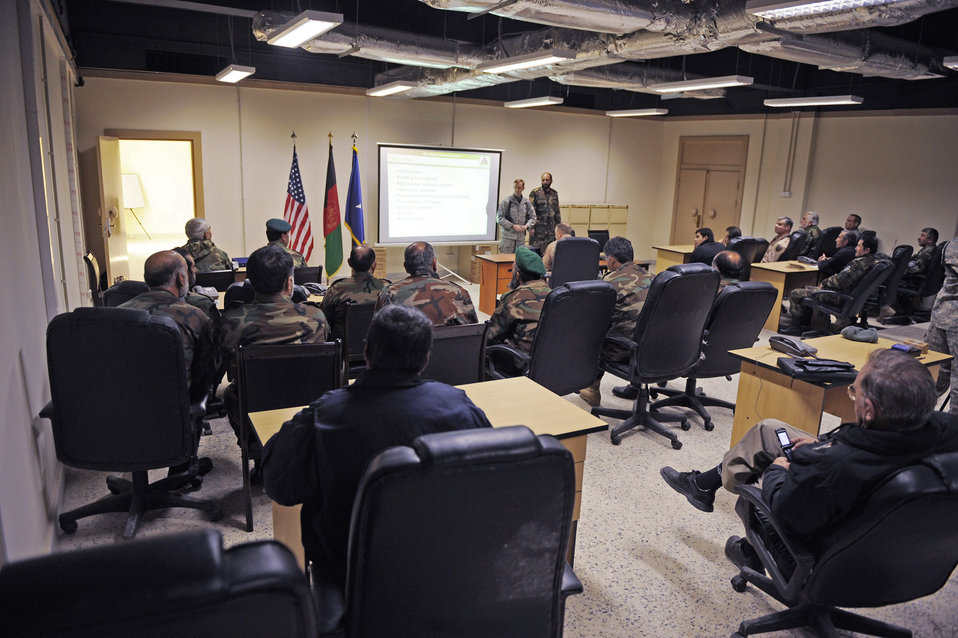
Airmen train Afghan officers on command, control

Afghan army air corps members sit through a graduation ceremony for the Afghan Command and Control Center Course Jan. 24 at Kabul, Afghanistan. The command and control course taught by American Airmen is four weeks long and graduated 16 members.